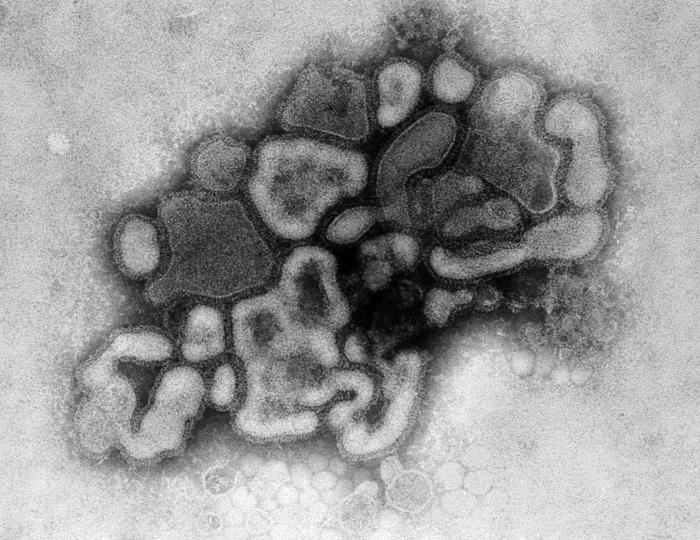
Under a plate magnification of 37,800X, this transmission electron micrograph (TEM) depicted the A/New Jersey/76 (Hsw1N1) virus, while in the virus' first developmental passage through a chicken egg.What is Swine Influenza?